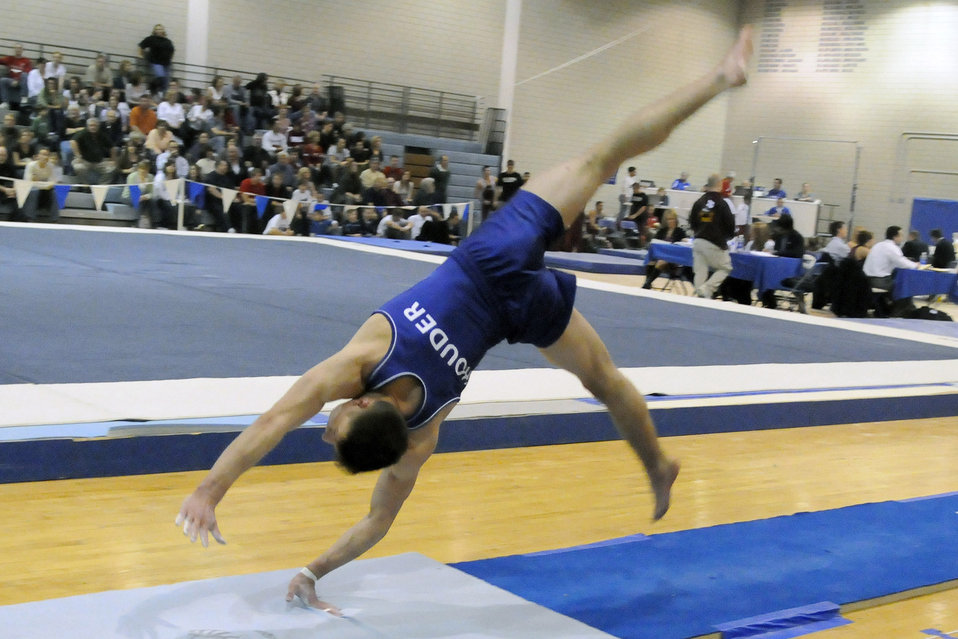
Airpower

U.S. Air Force Academy freshman Jacob Houder performs a Yurchenko vault during the annual Rocky Mountain Open Jan. 10 at the Academy in Colorado. The Falcons men's gymnastics team accounted for seven top-10 finishes as they placed third overall in the meet in front of a capacity crowd.